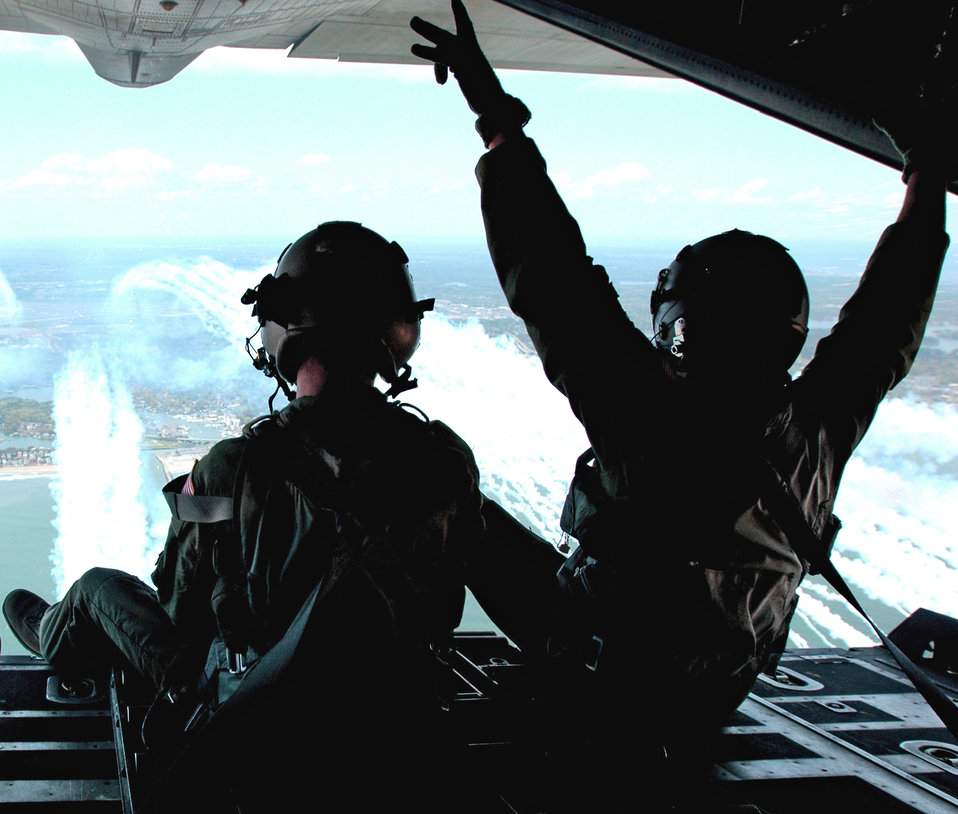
Room with a view

Two crew members from the 71st Rescue Squadron at Moody Air Force Base, Ga., sit on the ramp of an HC-130 as it deploys flares April 22 during the Joint Air Power Demonstration over Virginia Beach, Va.